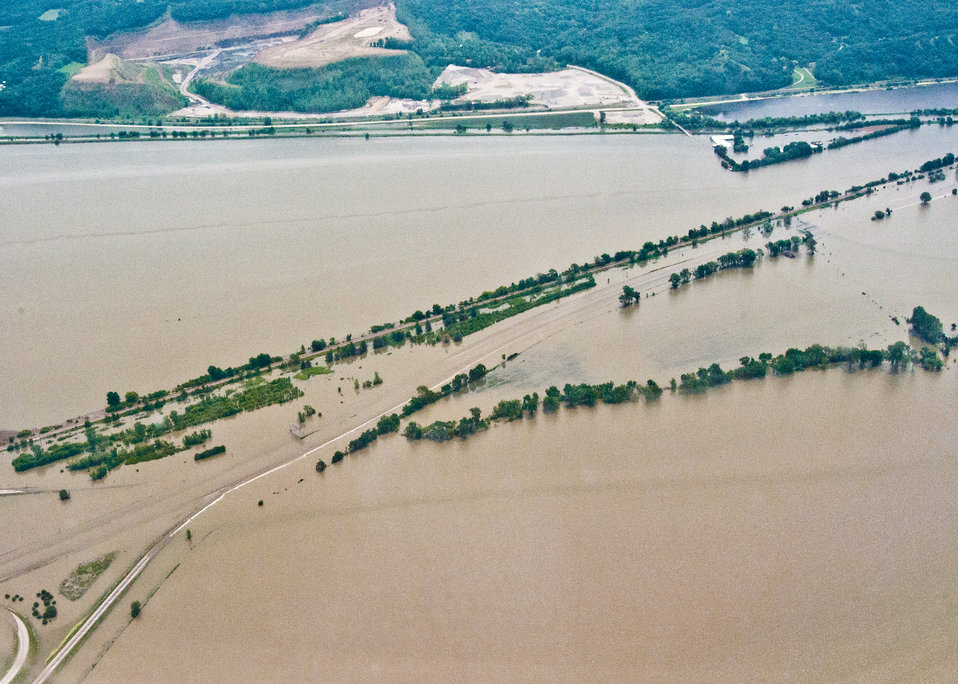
The Missouri river flooded hundreds of acres in Nebraska and Iowa. Agriculture Secretary Tom Vilsack visited the area on Friday, June 17, 2011, and spoke to agriculture producers and community leaders. The goal of the meetings was to get a firsthand look and provide that information back to Washington necessary to better deliver disaster programs expeditiously to effectively respond to this disaster. The United States Department of Agriculture agencies have programs to assist producers as they assess recovery efforts to assist with recovery in rural areas reeling from a natural disaster. USDA and the entire federal family have been working with state and local officials to provide relief to residents, farmers, ranchers and businesses.